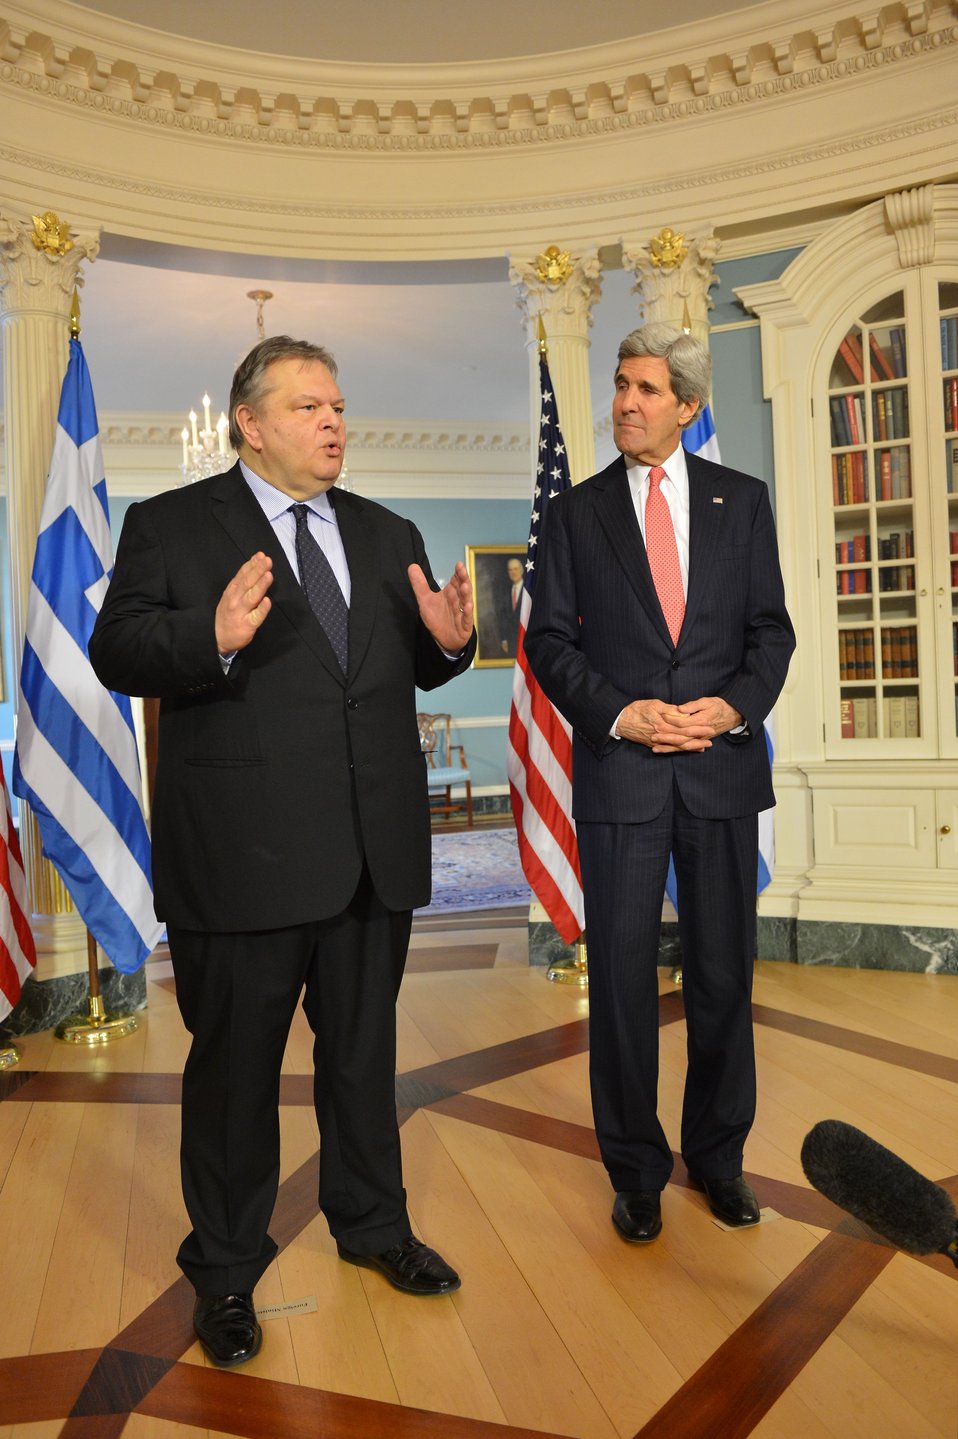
Secretary Kerry and Greek Foreign Minister Venizelos Address Reporters

U.S. Secretary of State and Greek Foreign Minister Evangelos Venizelos address reporters after their bilateral meeting at the U.S. Department of State in Washington, D.C., on January 17, 2014.